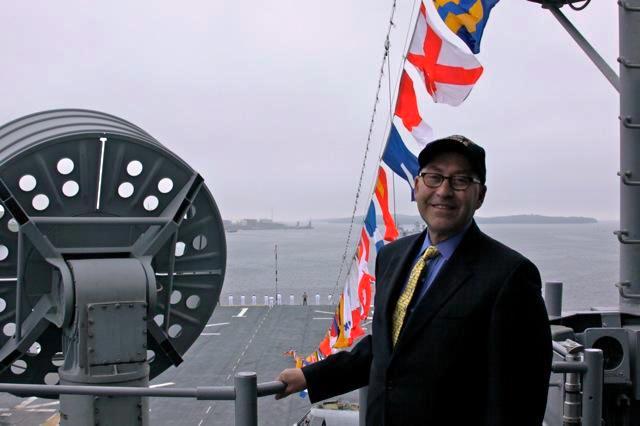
Ambassador Jacobson Poses for a Photo Aboard the USS Wasp

U.S. Ambassador to Canada David Jacobson poses for a photo aboard the USS Wasp in Halifax, Nova Scotia, Canada, on June 30, 2010.